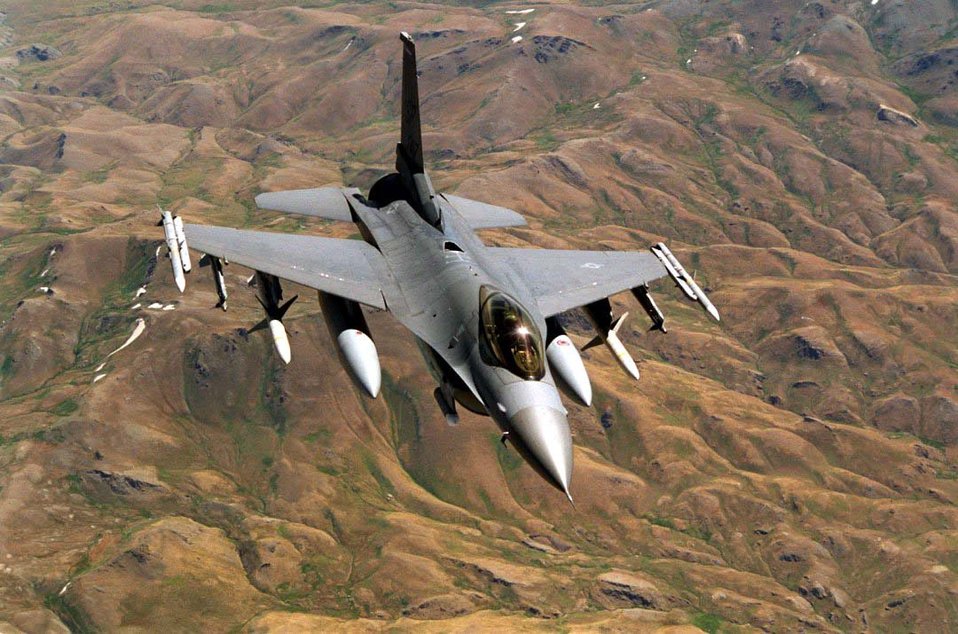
Feb. 15 airpower: F-16s provide convoy watch

An F-16 Fighting Falcon, similar to this one, provided cover for a convoy heading to rendezous with coalition ground forces that received enemy fire Feb. 14 in Iraq.